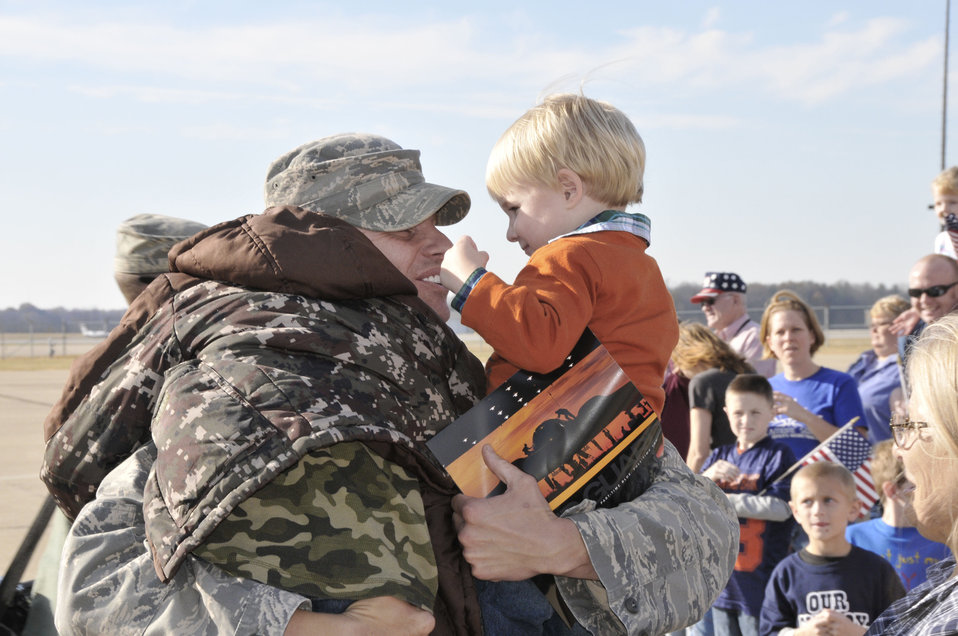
Guardsmen come home

Tech. Sgt. Brian Chesshir embraces his boys Nov 10, 2010, at Hulman Field Air National Guard Base, Ind., after returning from his seven-month deployment overseas. Sergeant Chesshir is assigned to the Indiana Air National Guard's 181st Security Forces Squadron.